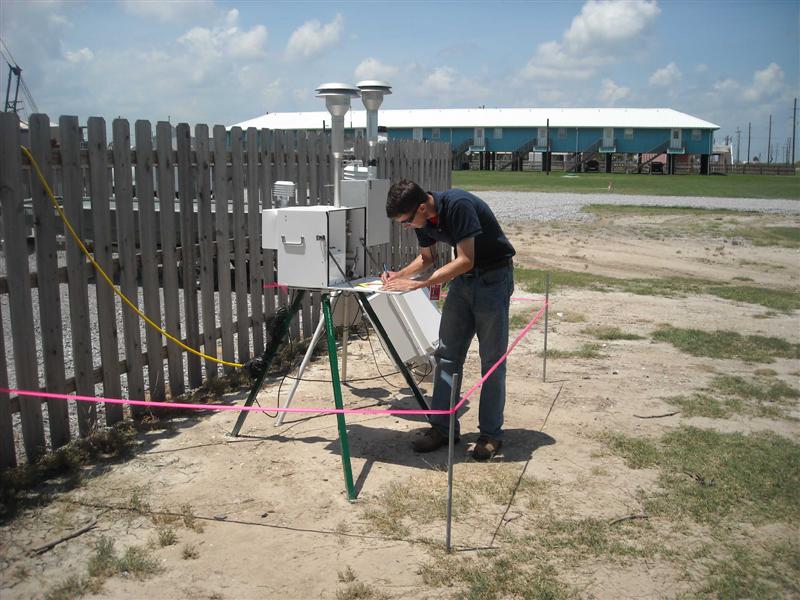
EPA Air Sampling Stations along the Gulf coast

EPA air sampling along the Gulf coast